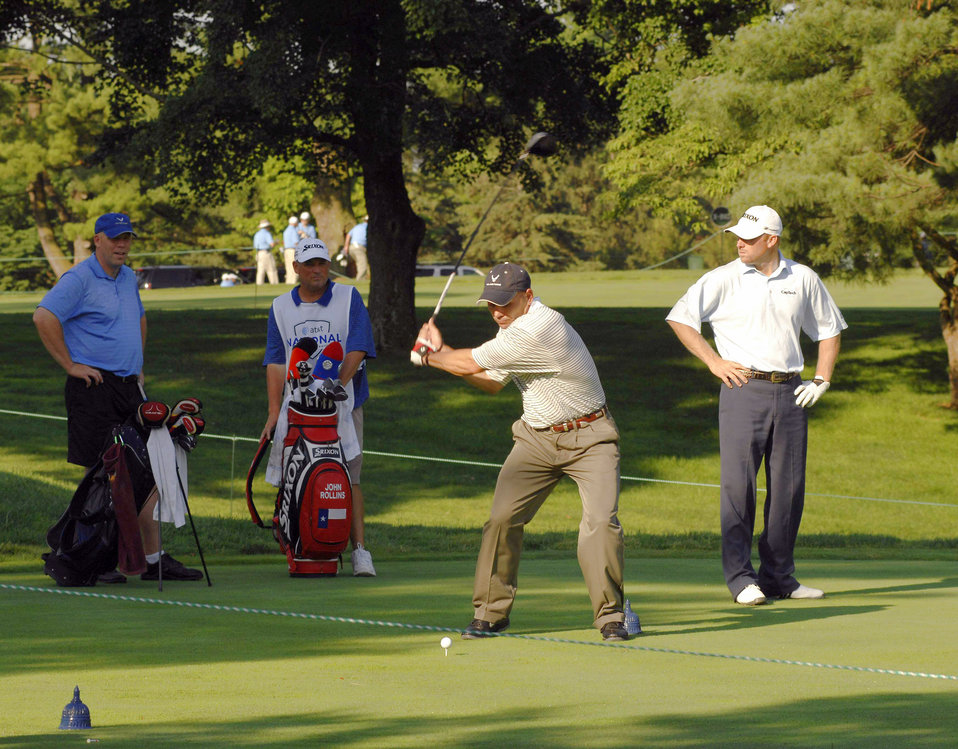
Andrews Airman participates in national golf tournament

Senior Master Sgt. Kirk Kessler tees off during the 2nd Annual AT&T National Golf Tournament July 2 at the Congressional Country Club in Bethesda, Md. The Tiger Woods Foundation selected Sergeant Kessler to play in the tournament. Sergeant Kessler is assigned to the 316th Civil Engineer Squadron from Andrews Air Force Base, Md.